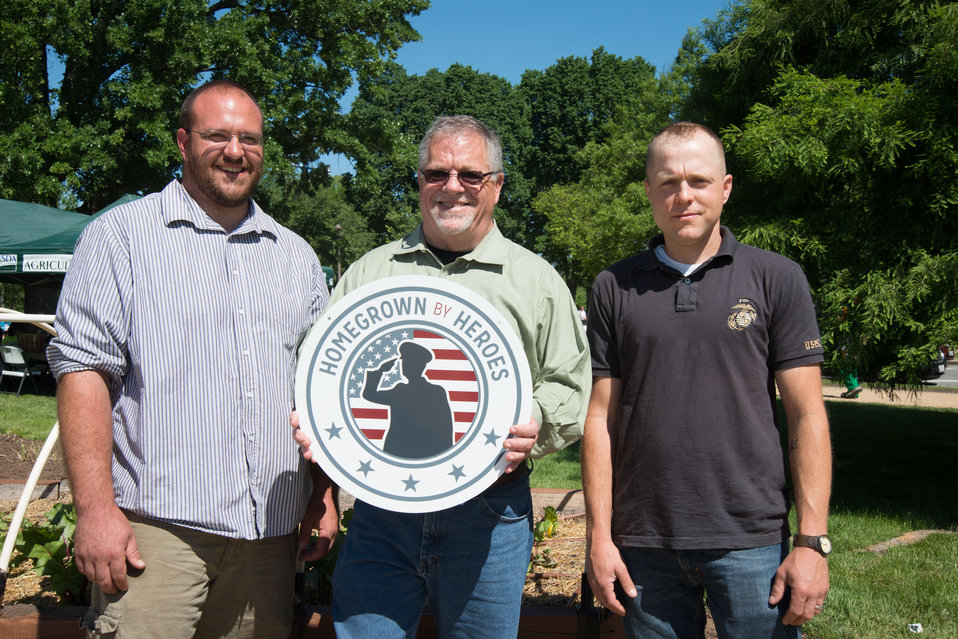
(L to R) Augusta, WV, Bigg Riggs Farm owner (former U.S. Marine ) Calvin Riggleman, Farmer Veteran Coalition Executive Director Michael O’Gorman, and Malwah, NJ, Southtown Farm owner (former U.S. Marine) Matt Solerno stand with Homegrown by Heroes sign at the opening of the U.S. Department of Agriculture’s (USDA) Farmers Market in the east parking lot of USDA in Washington, D.C. on Friday, Jun. 6, 2014. Homegrown By Heroes initiative allows farmers, ranchers, fishermen, and the like from all 50 states and U.S. territories who have served or are still serving in any branch of the U.S. military the ability to use the logo on their agricultural products. Consumers and businesses purchasing agricultural products will begin to see this logo at the point-of-purchase and on business signage, enabling them to select products that support our country’s farmer veterans.